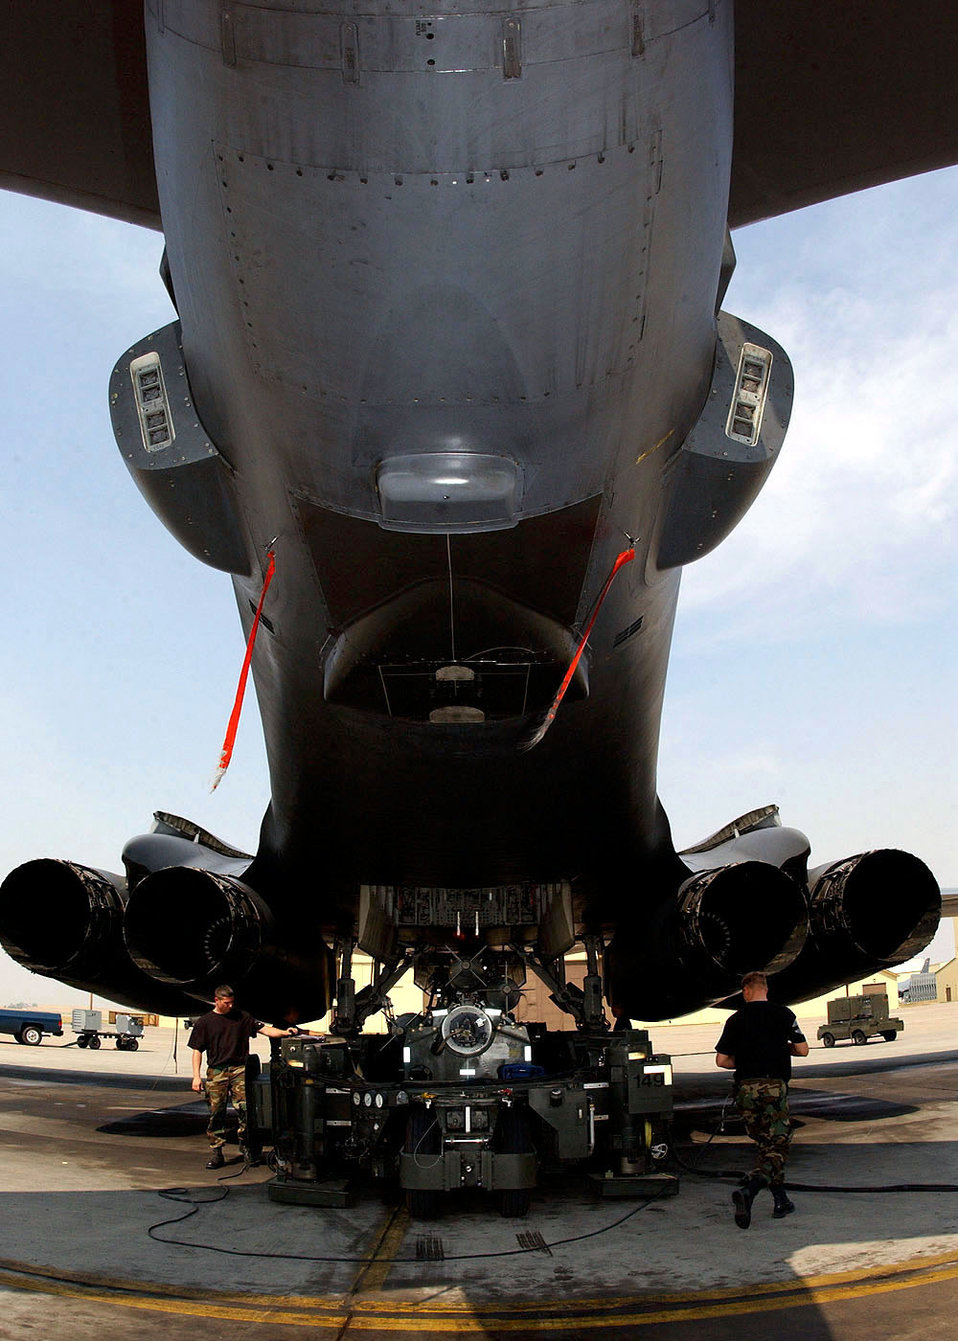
Lancer unloading

ELLSWORTH AIR FORCE BASE, S.D. -- Airmen from the 28th Aircraft Maintenance Squadron here unload munitions from one B-1 Lancer to install them on another. Ellsworth aircraft and airmen are deploying to support operations Enduring Freedom and Iraqi Freedom.